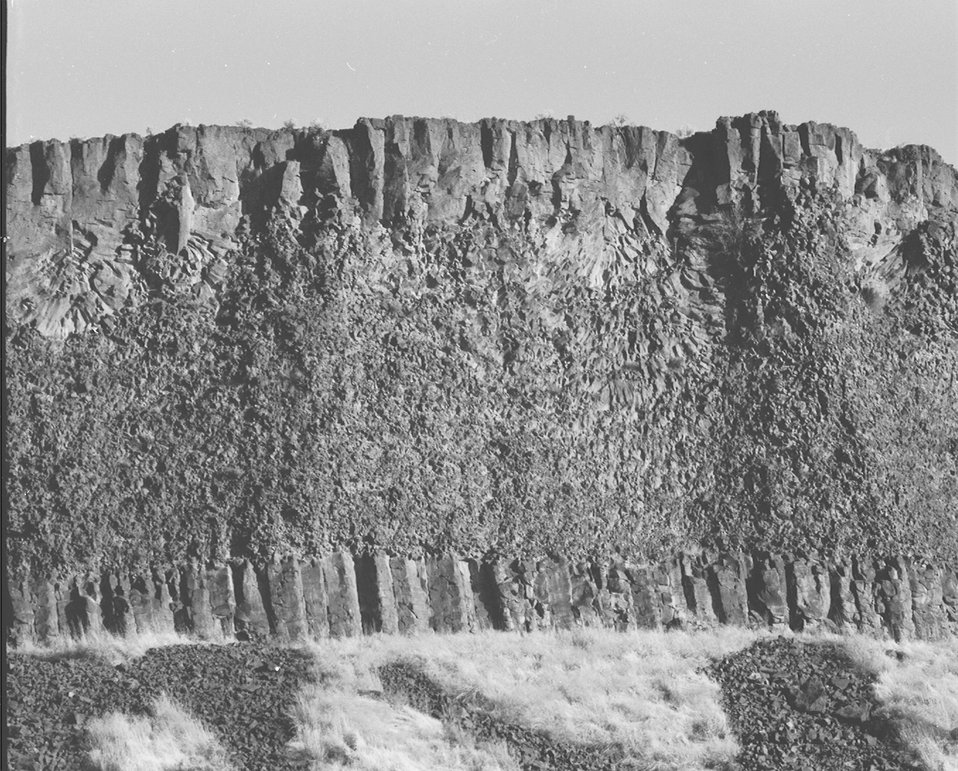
Colonades and bottom of flow near Lucky Peak Four Rivers LSRD Lower Snake River District